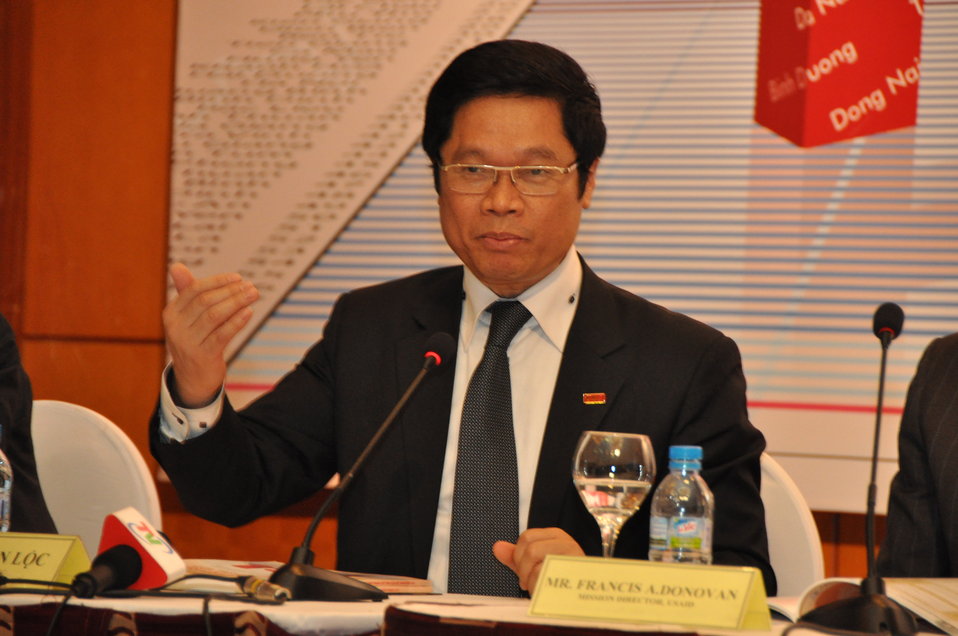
VCCI Chairman Vu Tien Loc at the Provincial Competitiveness Index 2011 Launch